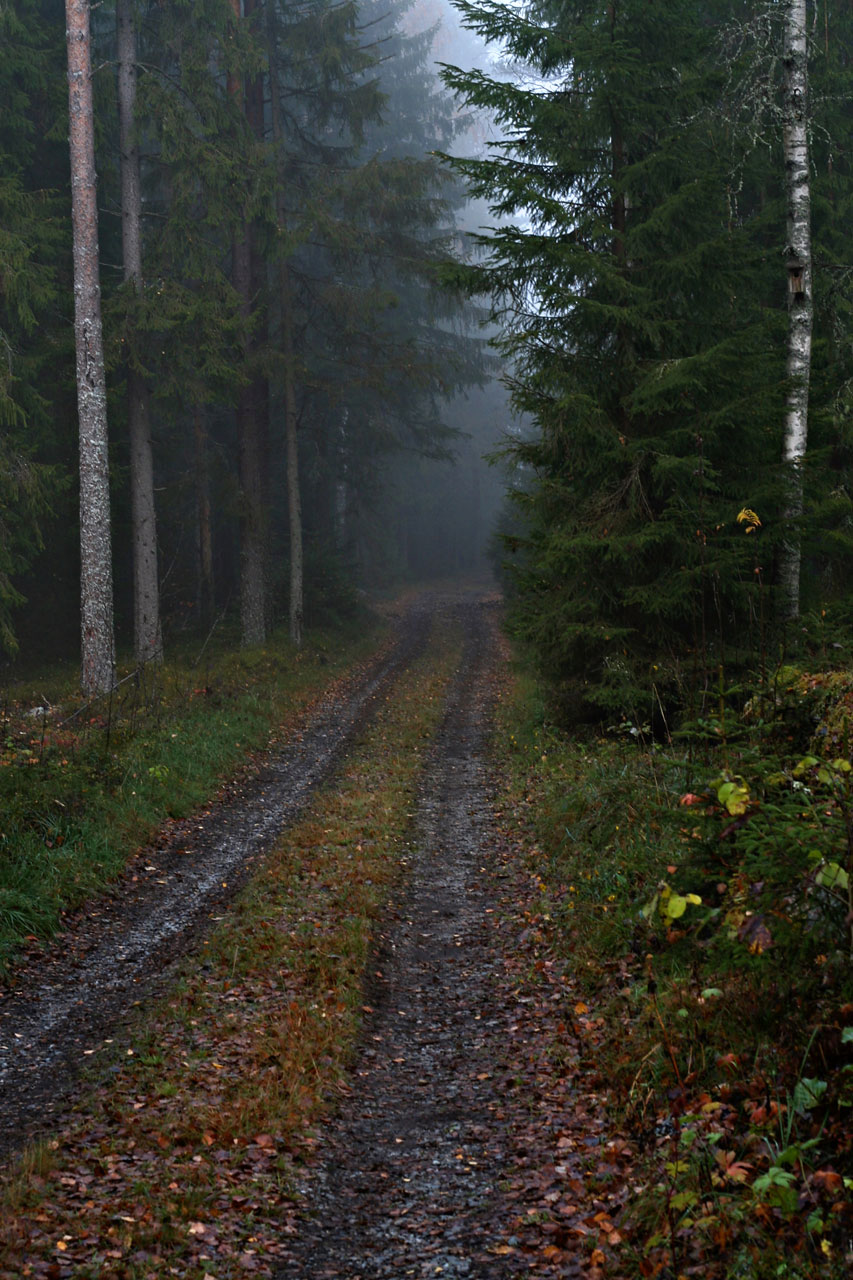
Wood road

Road in the woods.